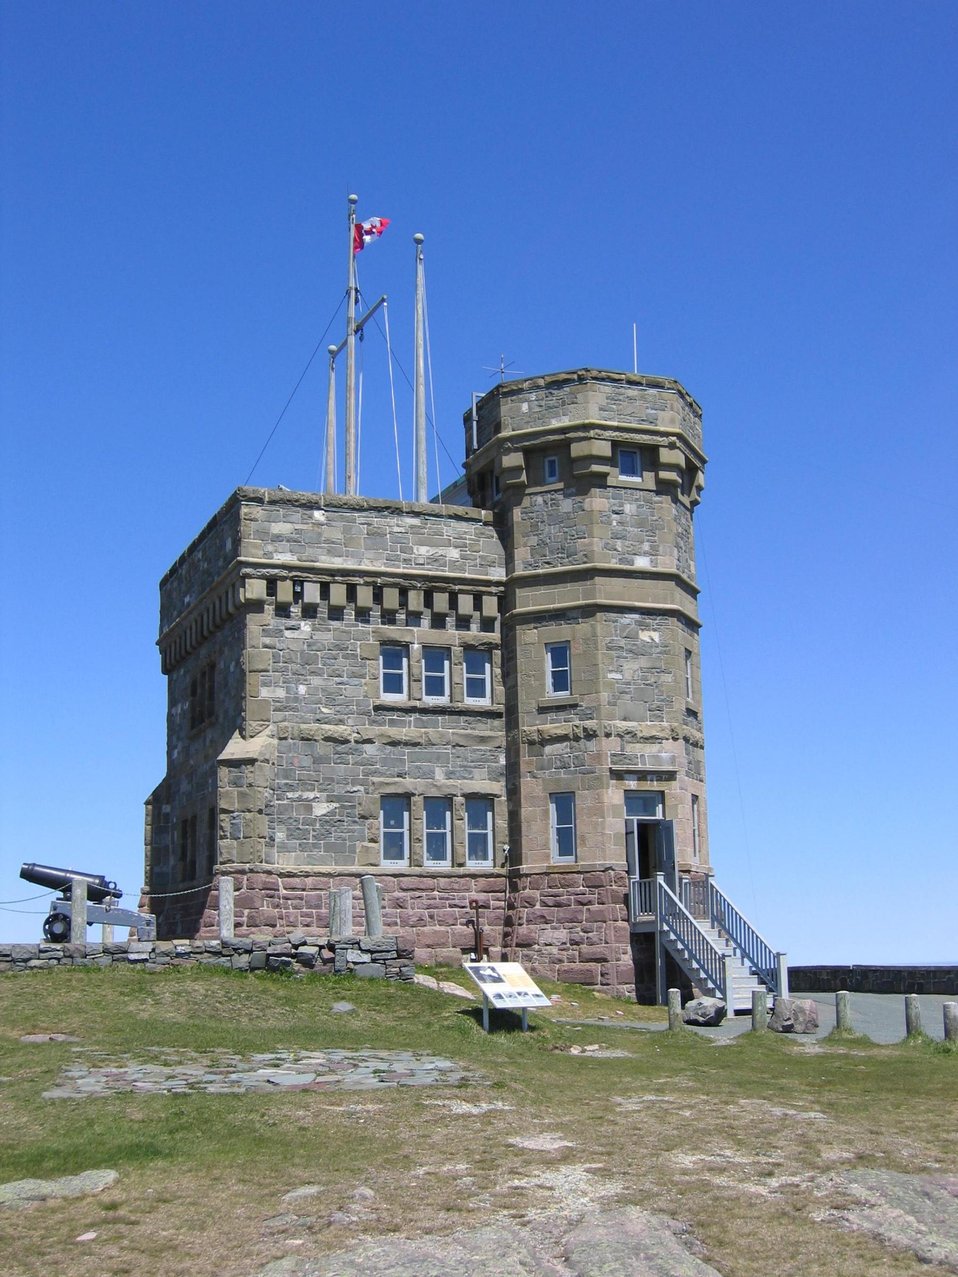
Cabot Tower in St. John's, Newfoundland 1897-1900